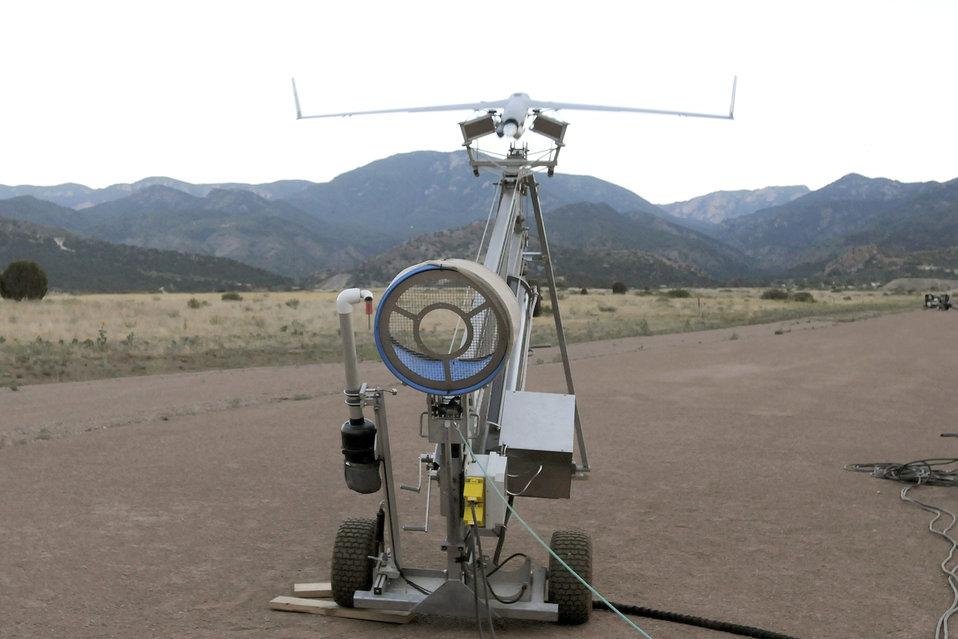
Scan Eagle

U.S. Air Force Academy cadets launch a Scan Eagle, a remotely piloted aircraft, July 6, 2010, at Fort Carson, Colo. Each student operated the Scan Eagle during six 40-minute training periods of actual flight.